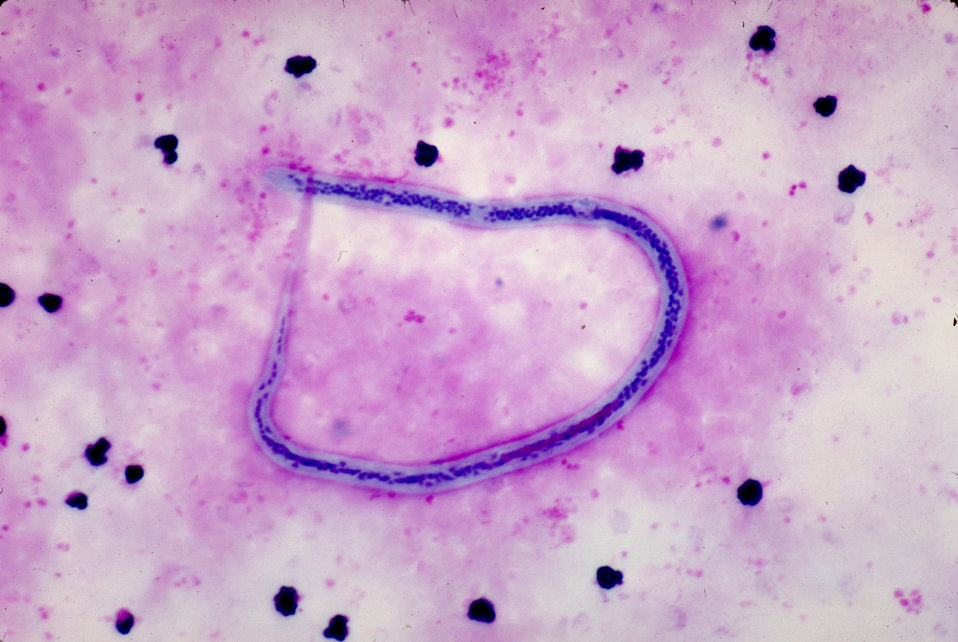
This is a micrograph of the internal structure of a Wuchereria bancrofti microfilaria using Giemsa stain.